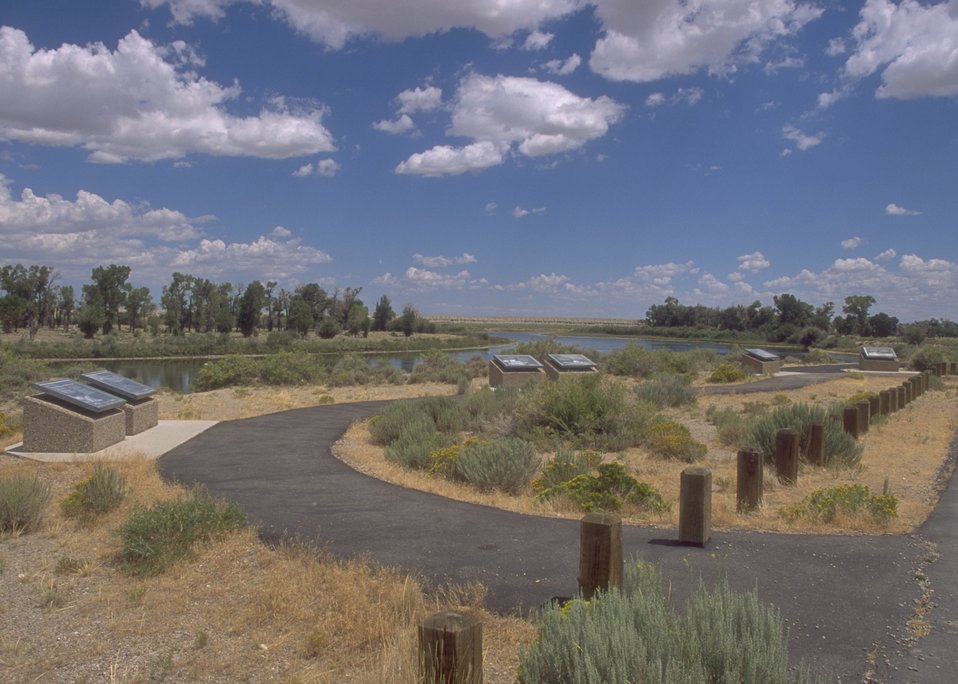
Lombard Ferry Crossing site along the Oregon & Mormon Trail on the Green River showing interpretive area, Rock Springs Field Office.